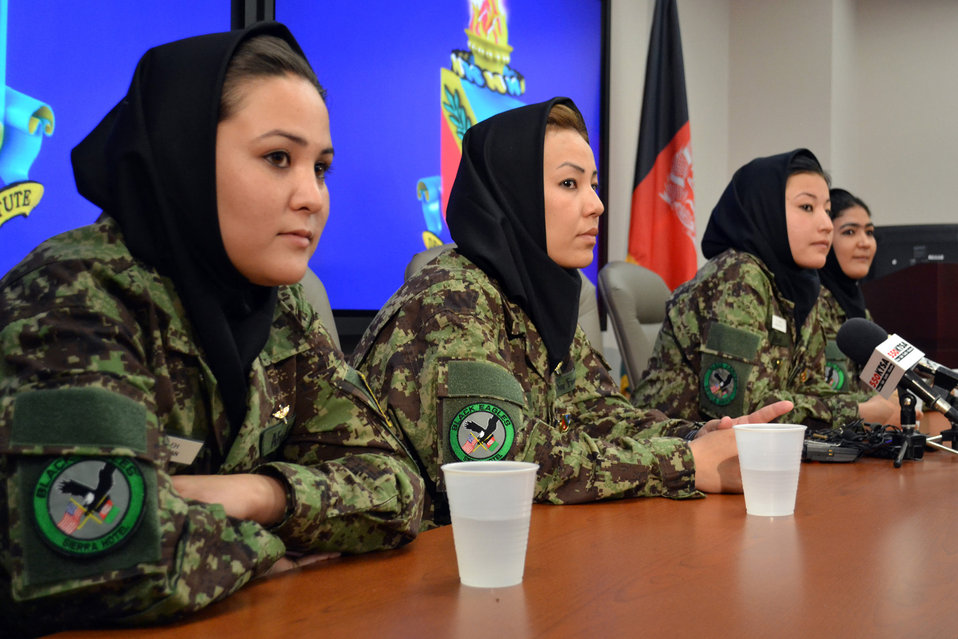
Afghan helicopter pilot candidates

Four Afghan helicopter pilot candidates attend a press conference July 13, 2011, at the Defense Language Institute English Language Center at Lackland Air Force Base, Texas. The women begin their English language studies at the DLIELC, marking a significant milestone in shaping the reconstruction of Afghanistan.